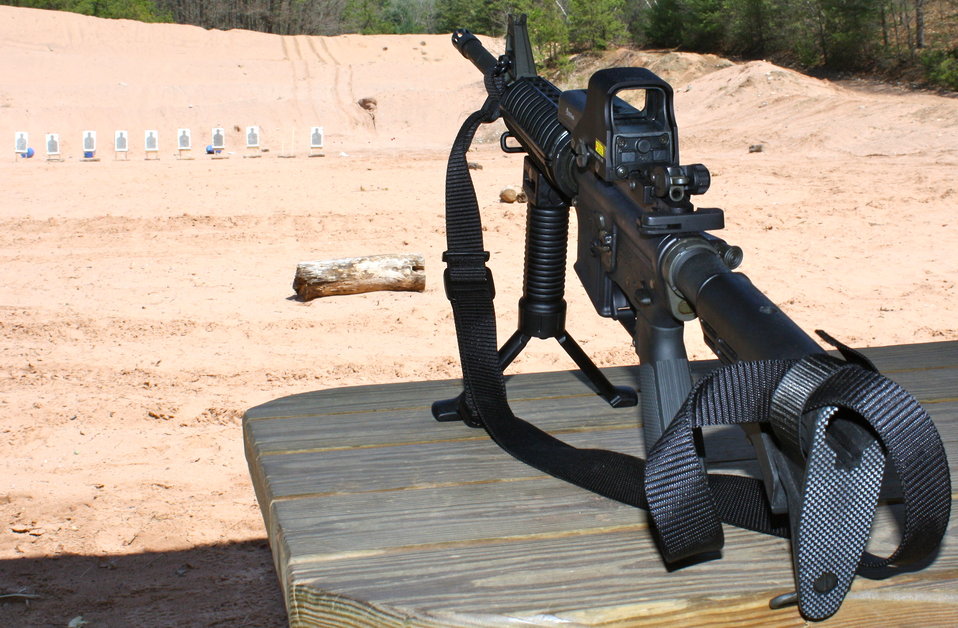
AR-15 on stand at firing range in Connecticut.